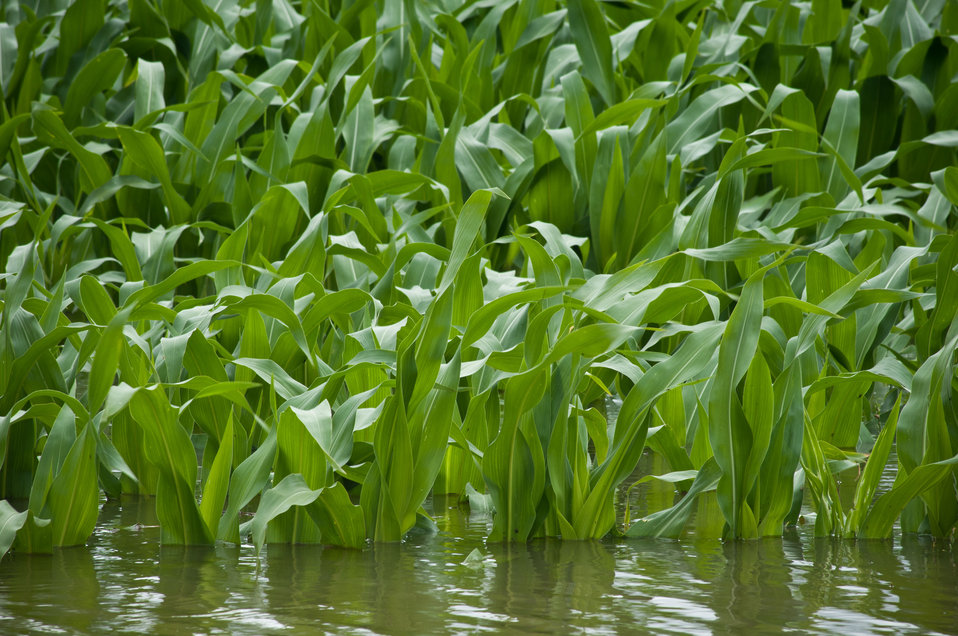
Mississippi River floodwaters have pushed into Yazoo River and into this corn field near Yazoo City, MS on Monday, May 16. 2011. The water saturated soil does not allow enough oxygen to the plant, by the time the water is expected to recede, the stalks will be dead.